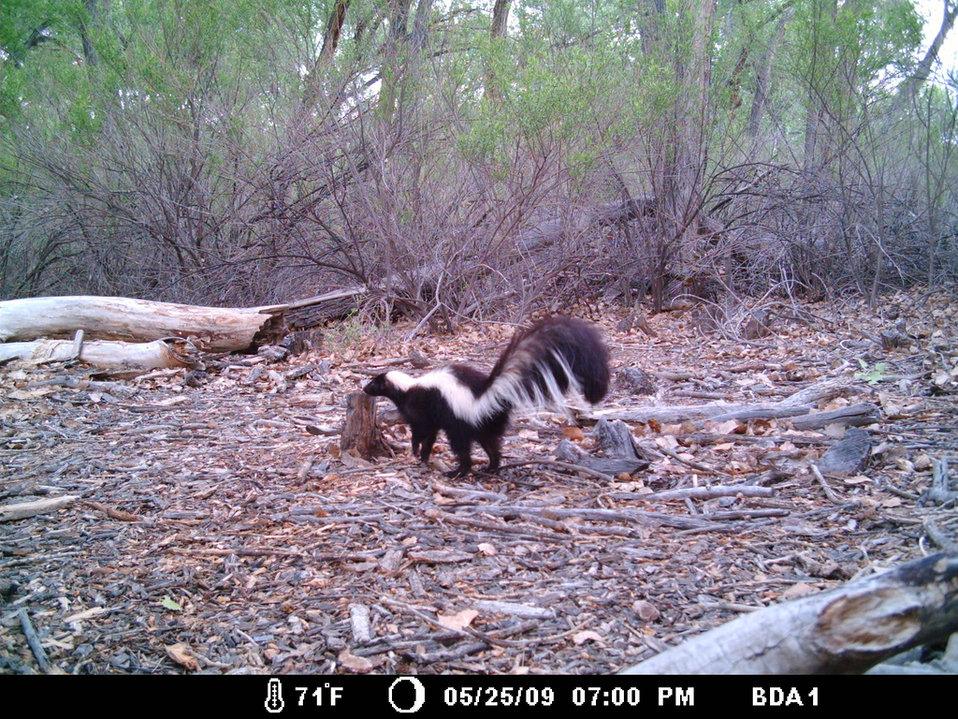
striped skunk

Bosque del Apache National Wildlife Refuge, NM
Camera trap project by Matthew Farley, Jennifer Miyashiro and James Stuart
Photo made available by J.N. Stuart, Creative Commons